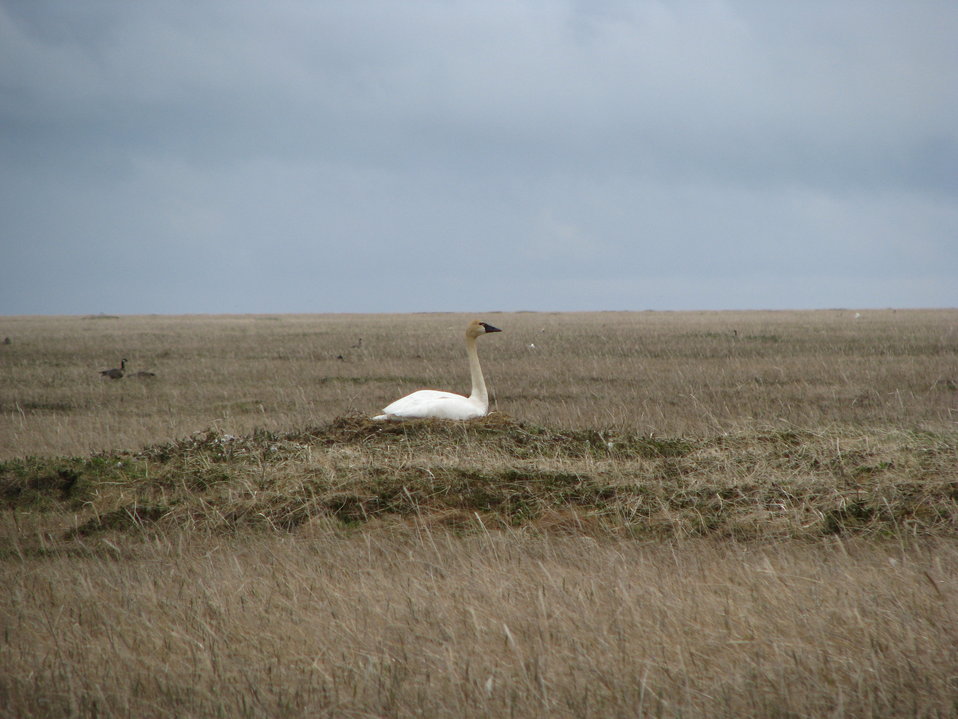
Swan on nest

Yukon Delta NWR